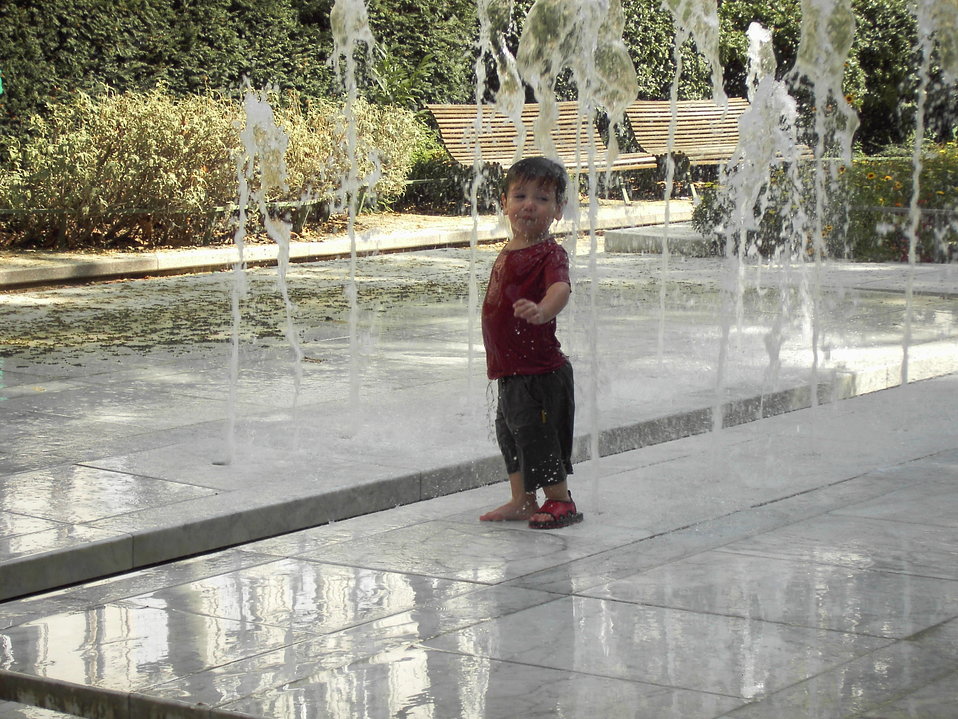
050907 Paris 135c CanalStMartin-le petit parisien